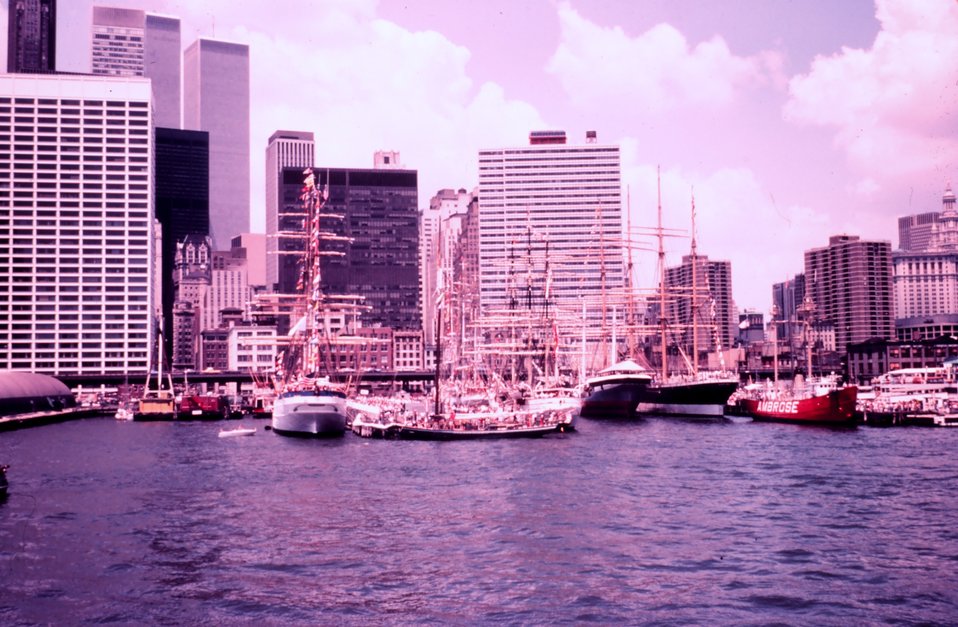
Manhattan - South Street Seaport